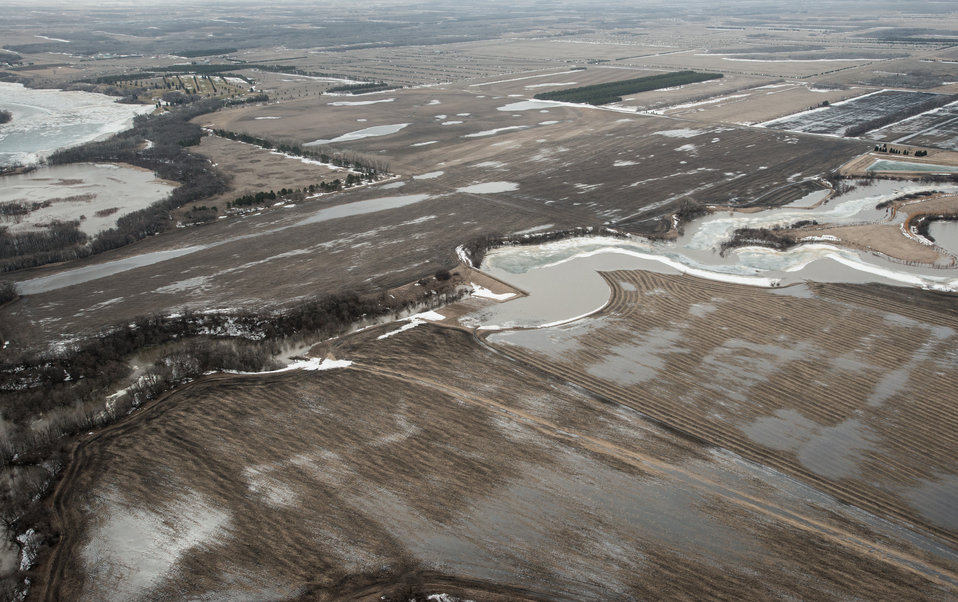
Flooding of Morris Dam, in Pembina County, ND, part of the Red River basin, on Wednesday, May 1, 2013. For information about this and other programs from the USDA Red River Basin Initiative (RRBI) please see www.mn.nrcs.usda.gov/news/features13/RRBI.html.